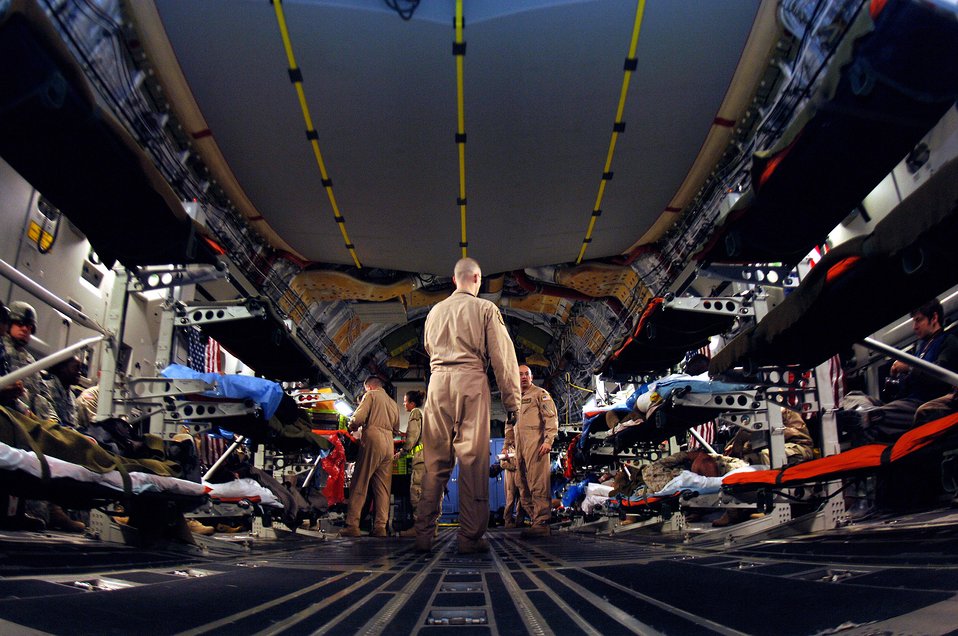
Aeromedical evacuation crewmembers prepare to take off Monday, March 20, 2006, with 16 patients aboard a C-17 Globemaster III. The patients were stabilized at the Air Force Theater Hospital in Iraq, prepared for flight by personnel from the Contingency Aeromedical Staging Facility and then evacuated overnight to Germany.